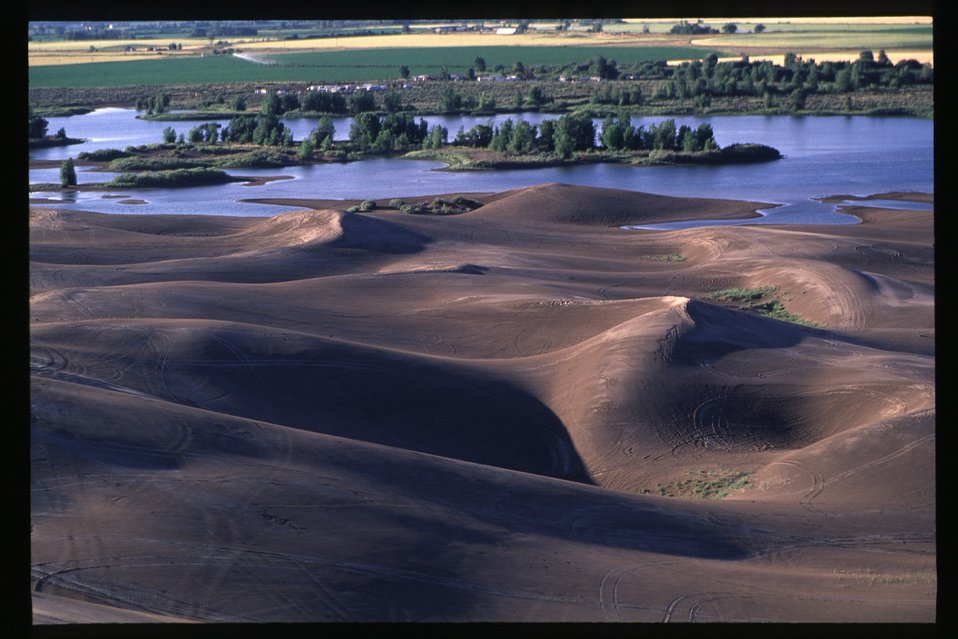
Recreation St Anthony Sand Dunes Off Highway Vehicles Idaho Falls Field Office USRD Upper Snake River District